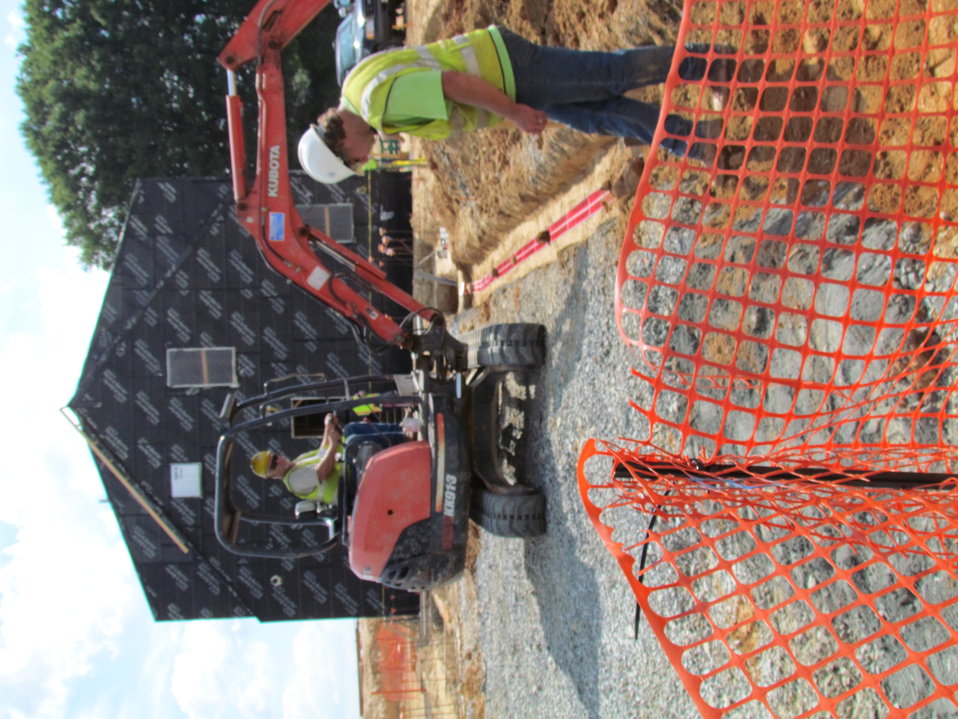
Net-Zero Energy Residential Test Facility - Workman inspecting garage foundation.